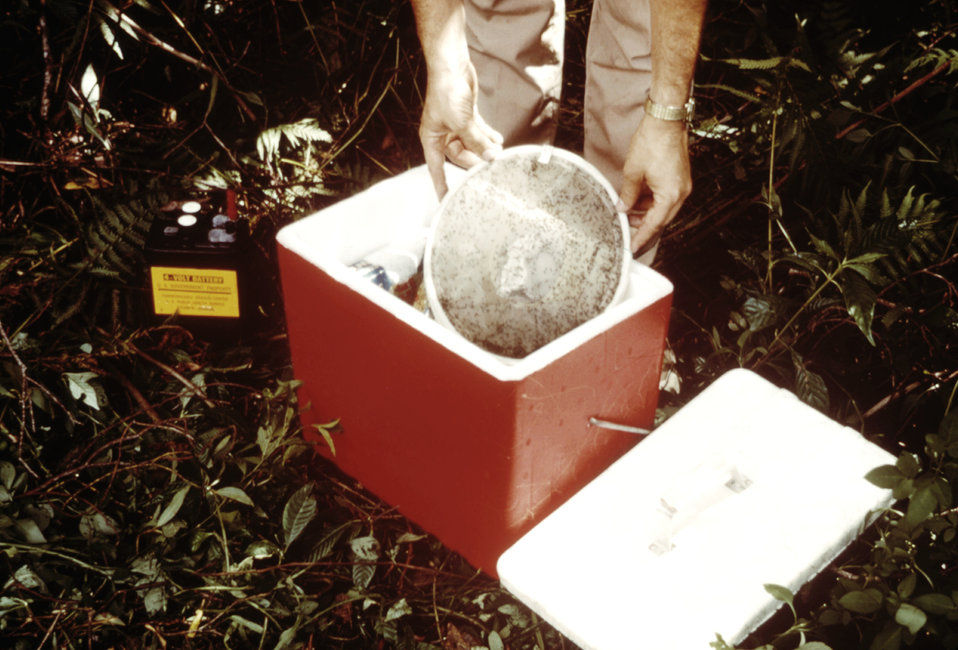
This CDC field researcher is shown setting a mosquito collection bag in a cooler for to be transported to a laboratory setting.